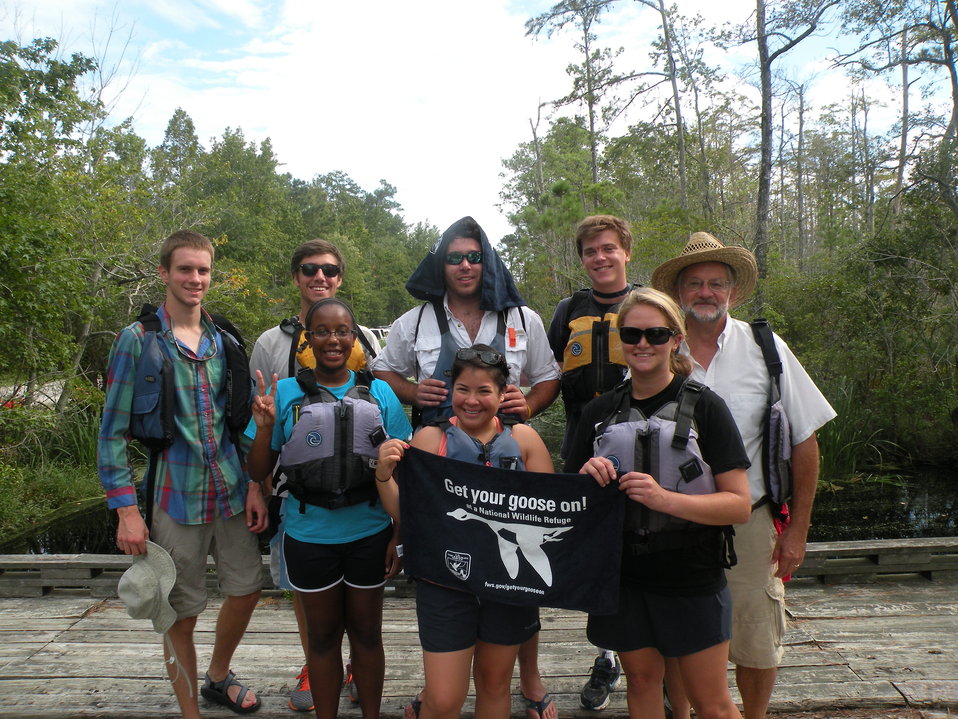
Get Your Goose On!

Students from NC State University Get Their Goose On! While visiting the paddling trail at ARNWR.

Ashlyn Knight/USFWS